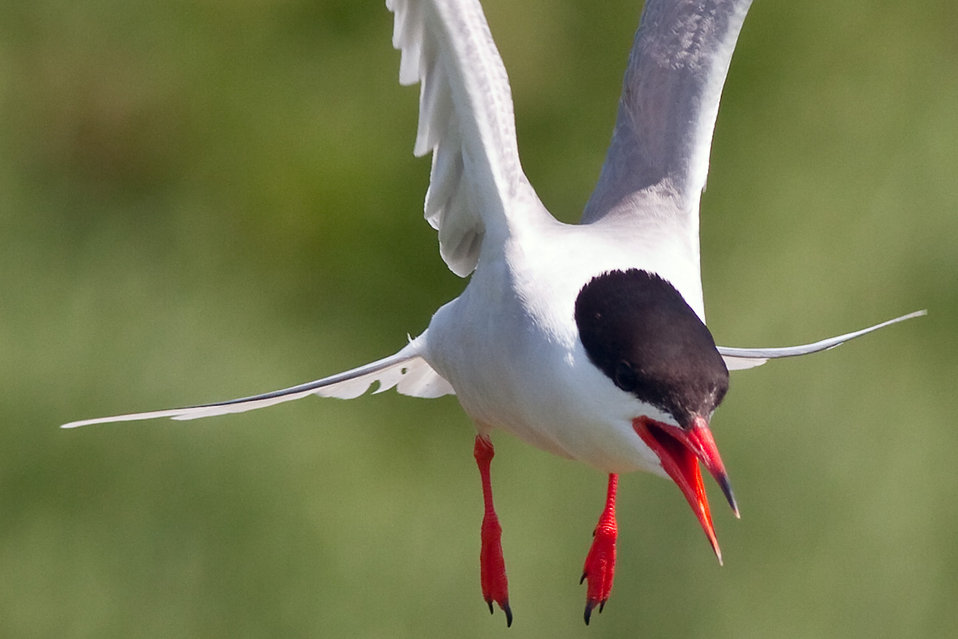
Common Tern

Petit Manan Island, Maine Coastal Islands NWR. Summer with the Seabirds blog: mainecoastalislands.wordpress.com/2010/08/01/terns/